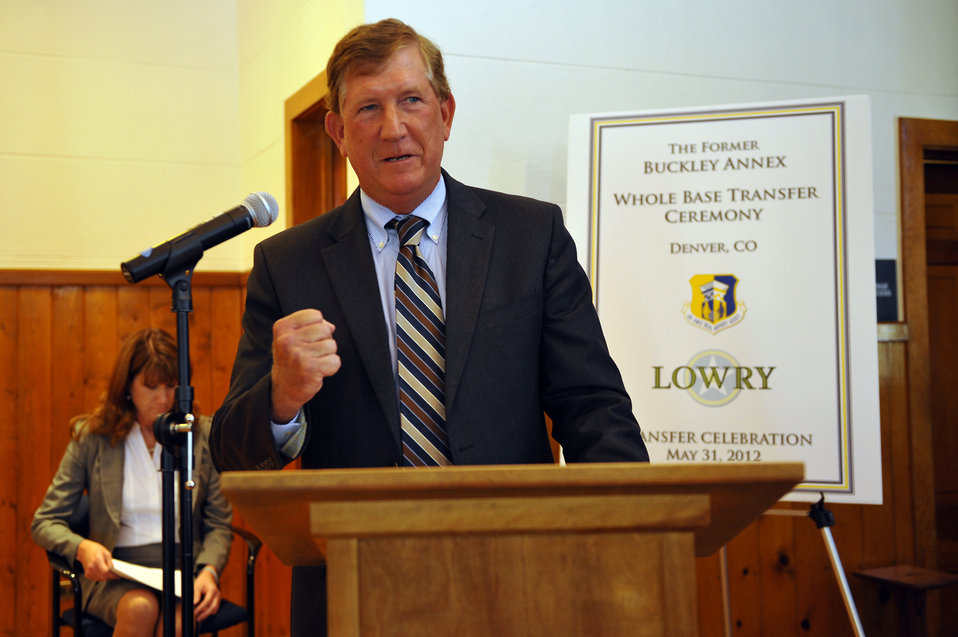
AF transfers last piece of former Lowery AFB back to community

Terry Yonkers, the Air Force Installations, Environment and Logistics assistant secretary, speaks at a transfer celebration marking the final turn-over of the last 70 acres of the former Lowry Air Force Base to the city of Denver on May 31, 2012. Marked for closure during the 1991 Defense Base Realignment and Closure Commission, the former base is now a sustainable, mixed-use community.